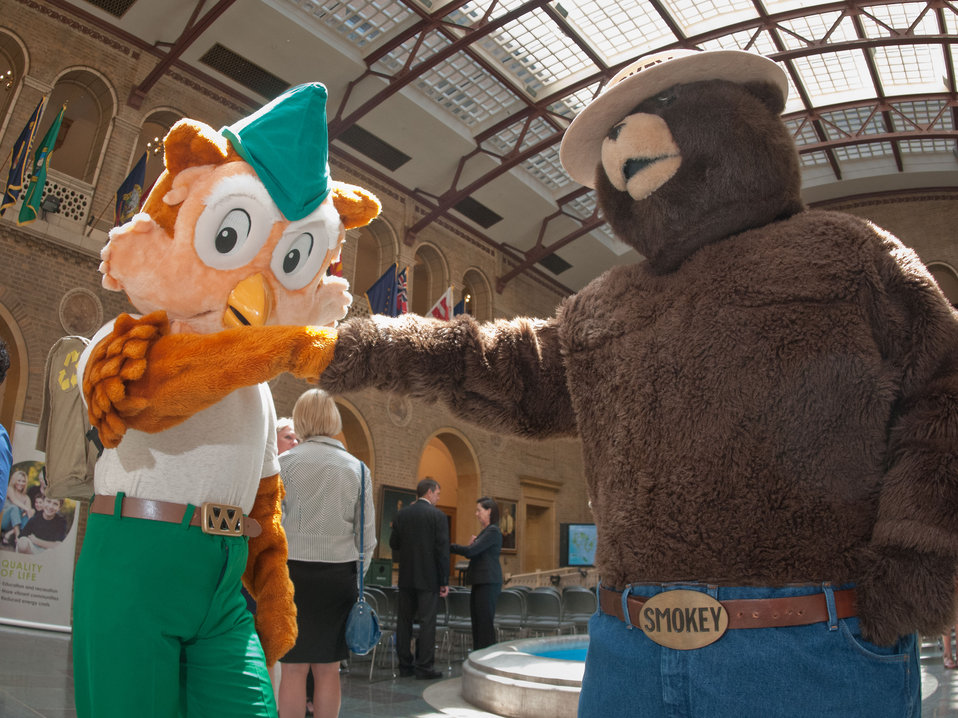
Woodsy Owl (left) and Smokey Bear give each other a fist bump at the International Year of Forests (IYOF) celebration on Friday, June 3, 2011 on the Patio of the Whitten Building, U.S.Department of Agriculture in Washington, DC.